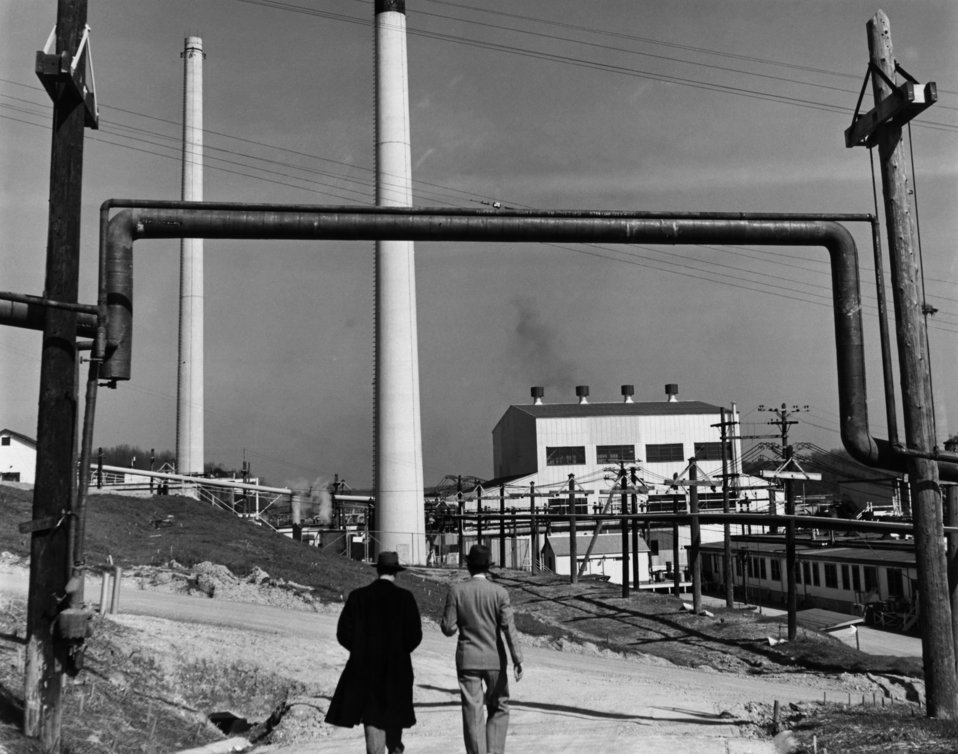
Exterior View of Graphite Reactor Oak Ridge

5471-2 DOE photo Ed Westcott 2-25-1949 ORNL Oak Ridge Tennessee